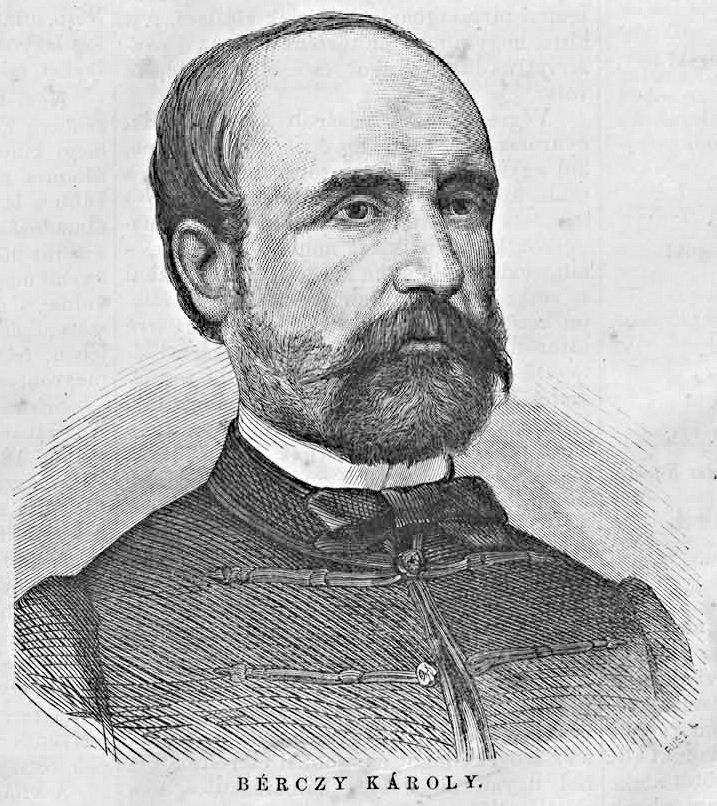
Bérczy Károly